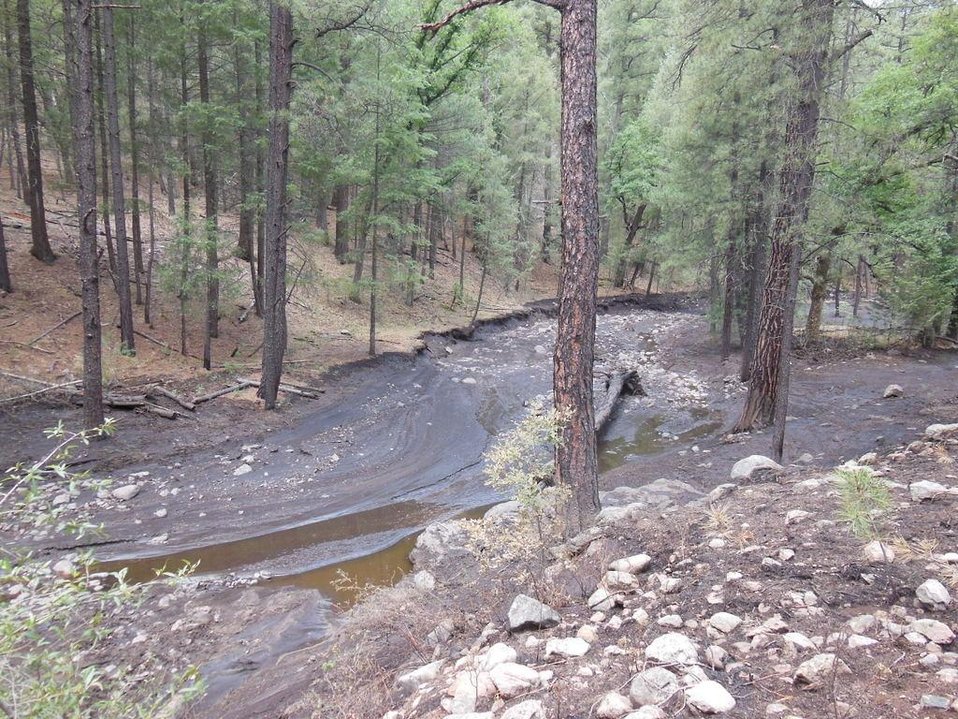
An ash flow in East Cayon area of the Silver Fire near Kingston, NM occurs from ash being washed into streams and creeks. The Silver Post Fire response has the Burned Area Emergency Response (BAER) team beginning operations to seed acres of high burn severity and to mulch additional acres. Seeding reduces effects to downstream life, property, and infrastructure by reducing erosion and runoff. Areas of high burn severity are to be seeded with a quick germinating, non-persistent annual cereal barley that would provide rapid ground cover. A small percentage of native perennial species would also be included to give the burned area a jump start in natural recovery, and provide for long-term ground cover. Mulch is the most effective treatment for controlling erosion and runoff, as it provides immediate ground cover. Mulch also assists in stabilizing soil in and around these areas.